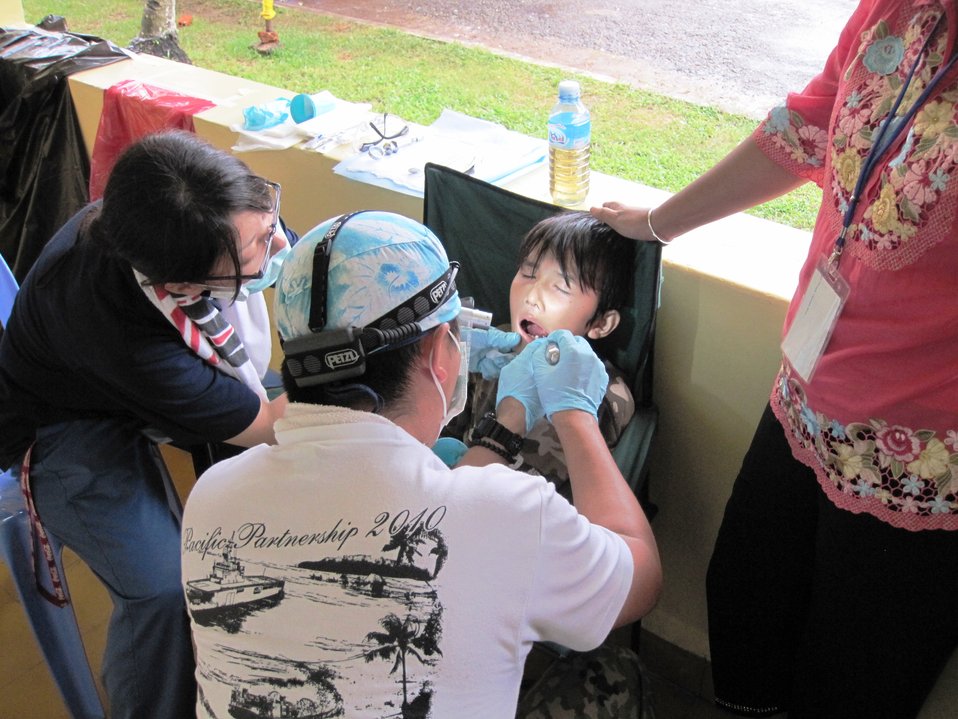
A Pacific Partnership 2010 Dentist Treats Cambodian Child

A Pacific Partnership 2010 dentist treats a Cambodian child in a dental clinic at Sihanouk Provincial Hospital in Sihanoukville, Cambodia, on June 22, 2010.